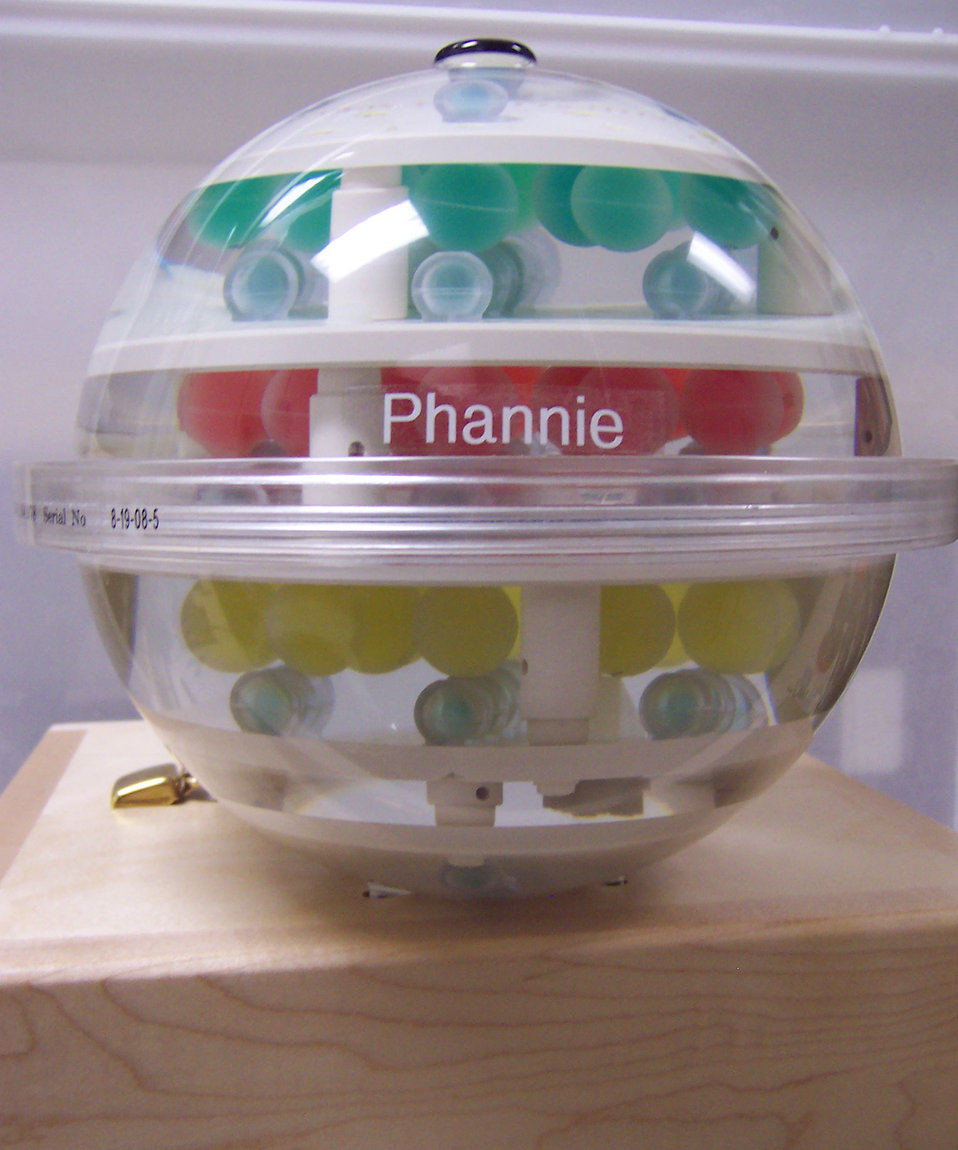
Calibration; MRI

Phannie is the first 'phantom' for calibrating magnetic resonance imaging (MRI) machines that is traceable to standardized values. The plastic sphere is about the size of a person's head and filled with 100 smaller spheres used as contrast-enhancing agents and measurement reference markers. NIST researchers in Boulder, Colo., built Phannie and tested it on an MRI scanner at the University of Colorado Brain Imaging Center.